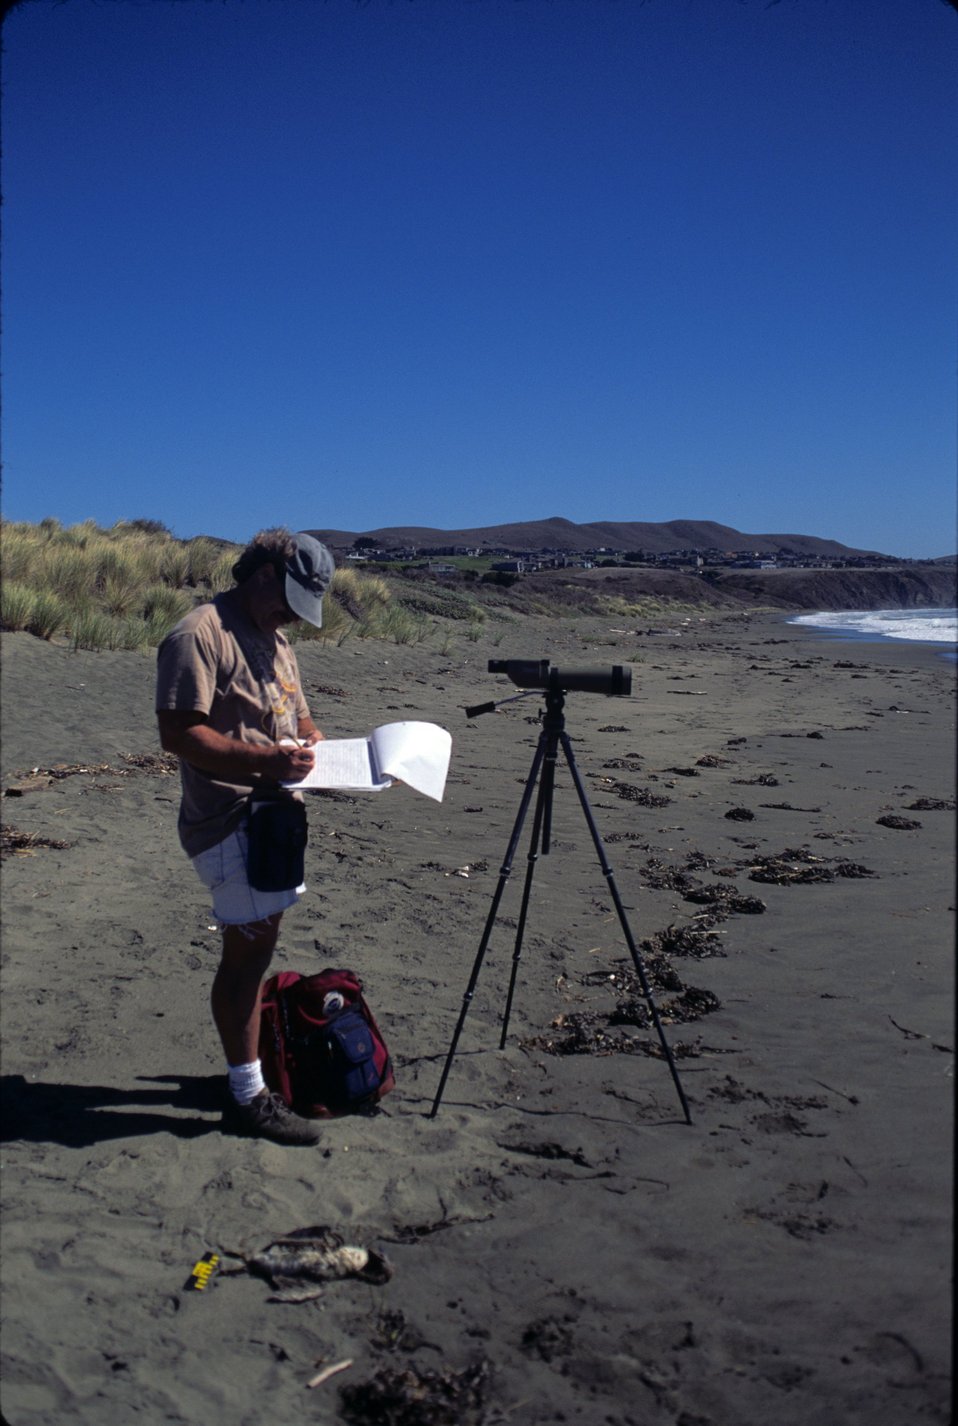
Doran Beach